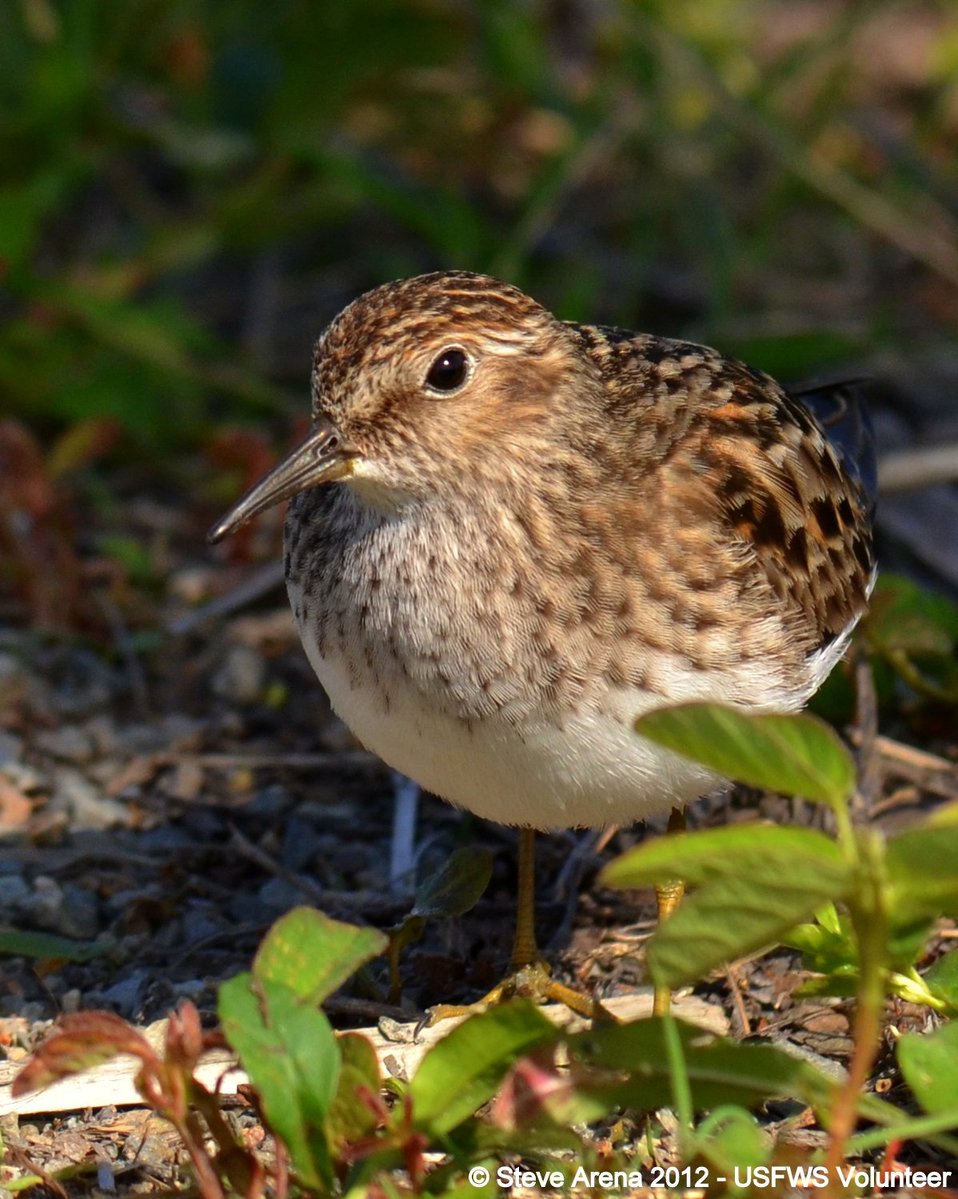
Least Sandpiper (Calidris minutilla) Great Meadows NWR, Concord, MA

Least Sandpiper Great Meadows NWR, Concord, MA

Credit: Steve Arena/USFWS

18 May 2012